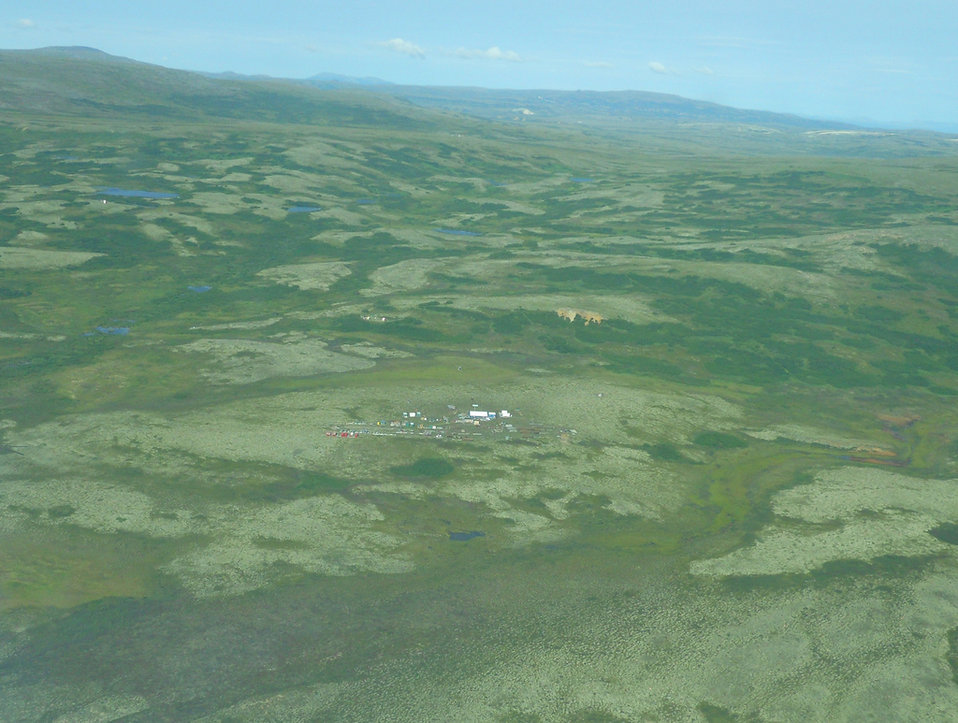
August 11, 2011 Exploring the pebble deposit

An exploration camp sits on top of the Pebble deposit, one of the largest undeveloped copper, gold and molybdenum deposits in the world.

Visit www.epa.gov/bristolbay for more information about EPA's Bristol Bay Watershed Assessment